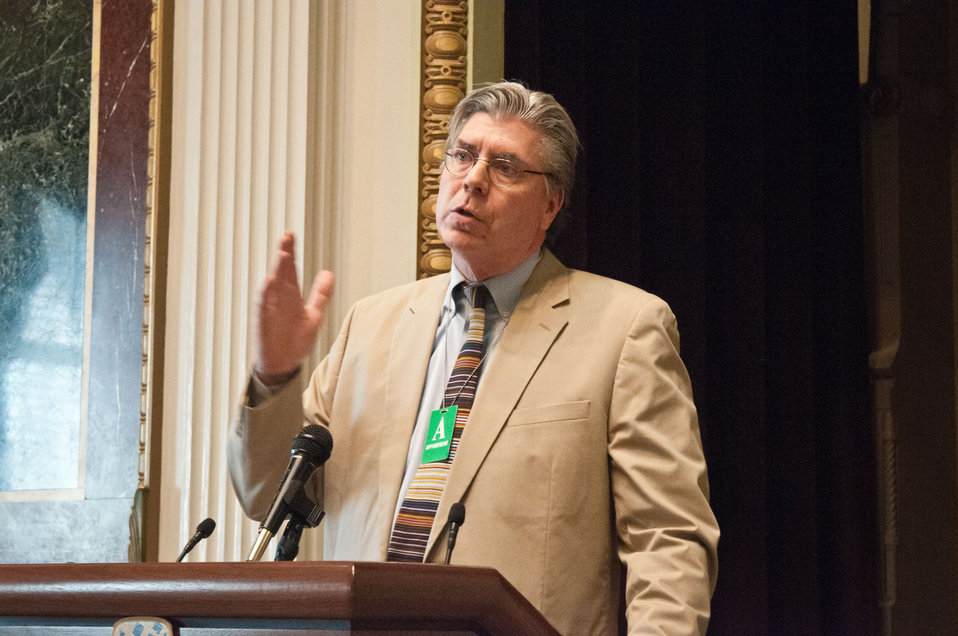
United States Department of Agriculture, Chief Economist Dr. Joseph Glauber discussed the agricultural economic outlook at the Spring National Association of Farm Broadcasters (NAFB), “Washington Watch” member retreat in Washington, D.C. This year the meeting was held in the Eisenhower Executive Office Building, Indian Treaty Room on Tuesday, April 24, 2012, featuring United Sates Department of Agriculture and Obama Administration officials. This opportunity provides an occasion to highlight efforts to rebuild and revitalize rural America, including efforts for the agricultural community. NAFB is the recognized and trusted source of agricultural and rural lifestyle information for America with approximately 200 members who broadcast via radio in nearly every state in the country.